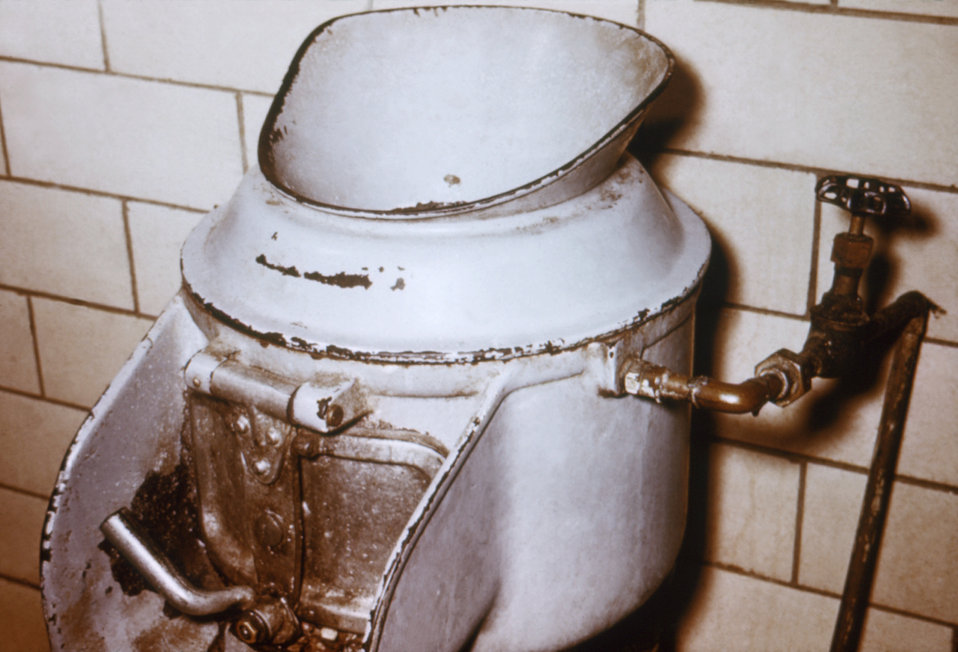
This potato-peeler contains a submerged water supply inlet, which makes the unsanitary back-siphonage of dirty water possible.